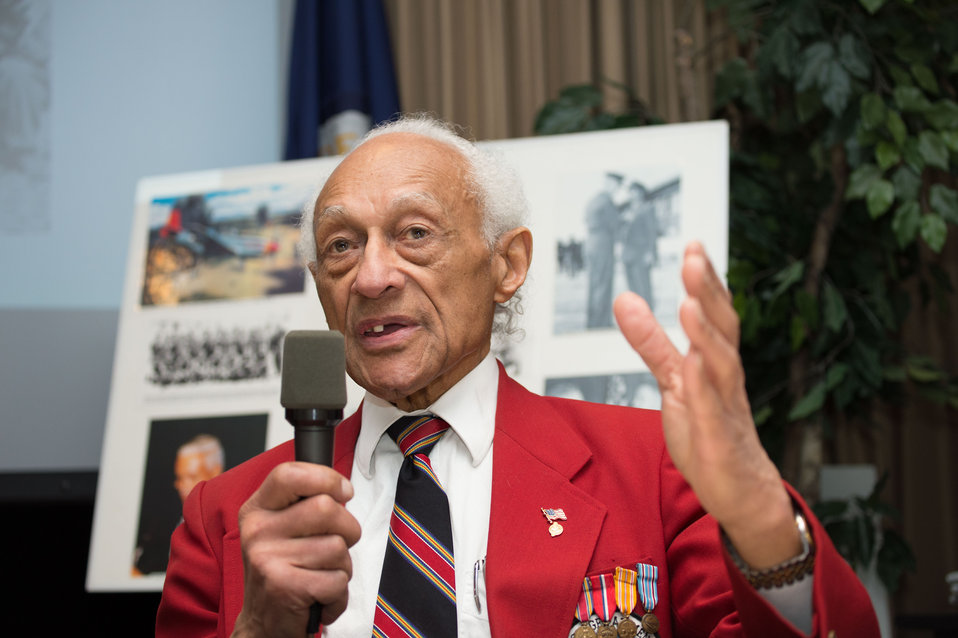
Tuskegee Airmen Incorporated (TAI) National Historian William F. Holton speaks at the U.S. Department of Agriculture's (USDA), Office of the Assistant Secretary for Civil Rights (OASCR) program “In conversation With Tuskegee Airmen”, which honored the airmen’s successes both overseas and at home at USDA in Washington, D.C. on Thursday Mar. 27, 2014. Holton spoke about his experiences in the U.S. Navy. Questions from the audience provided several opportunities for discussion about civil rights challenges and how they achieved success and respect.